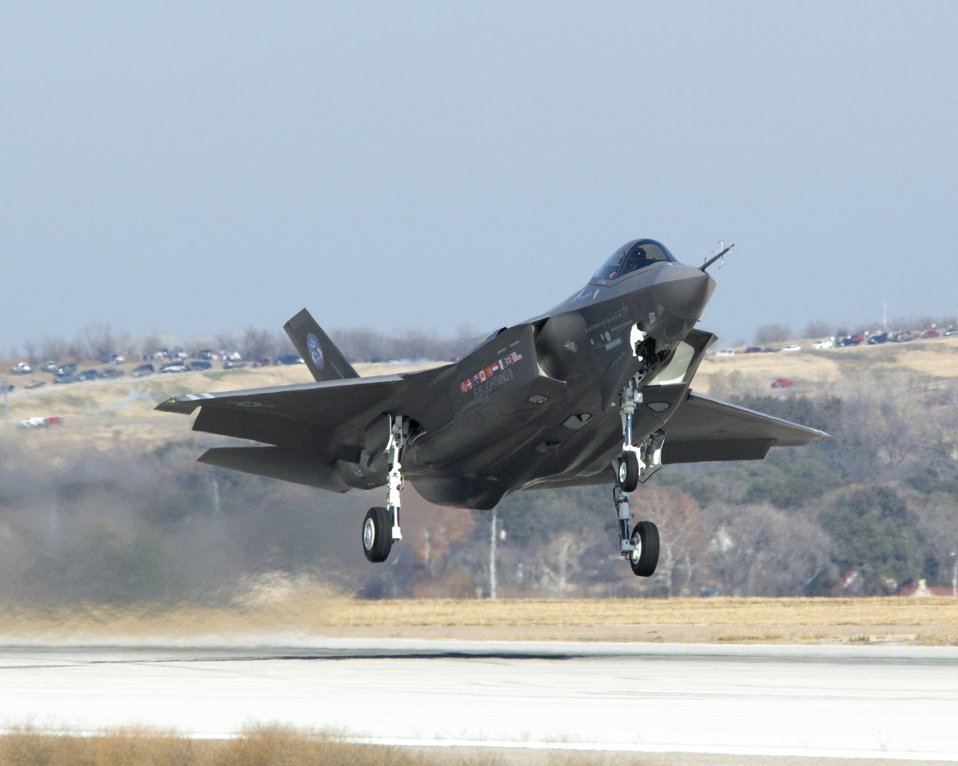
Lightning in sky for first time

The F-35 Lightning II Joint Strike Fighter takes off for its initial flight Dec. 15 over Fort Worth, Texas.